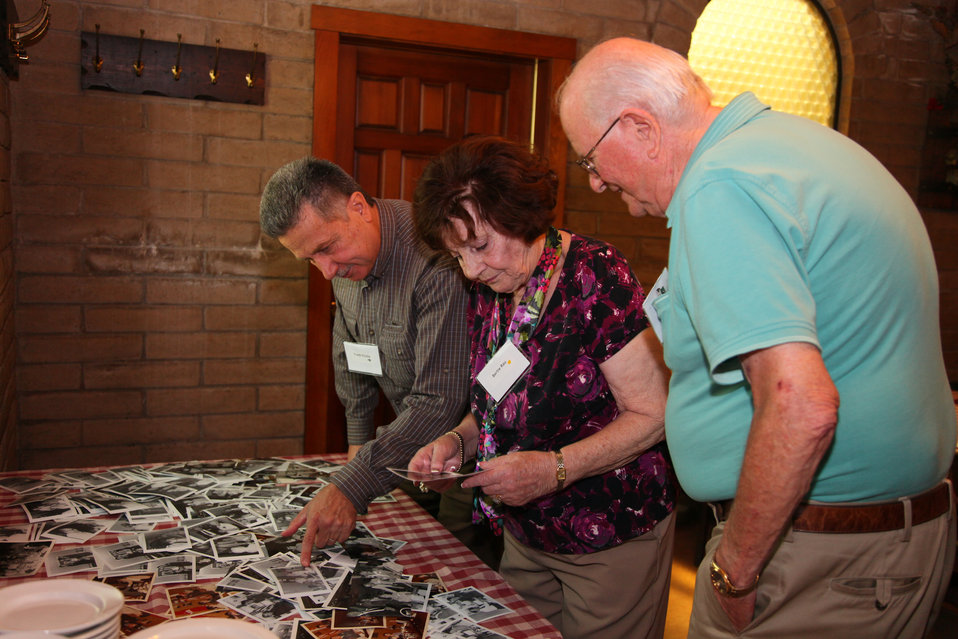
Pictures from district’s yesteryear

Sacramento district retirees (from left to right) Frank Piccola, Bertie Rau and John Rompala peruse photos of fellow district employees at the 30th annual Sacramento district retiree luncheon at Club Pheasant in West Sacramento, Calif. May 26, 2011.